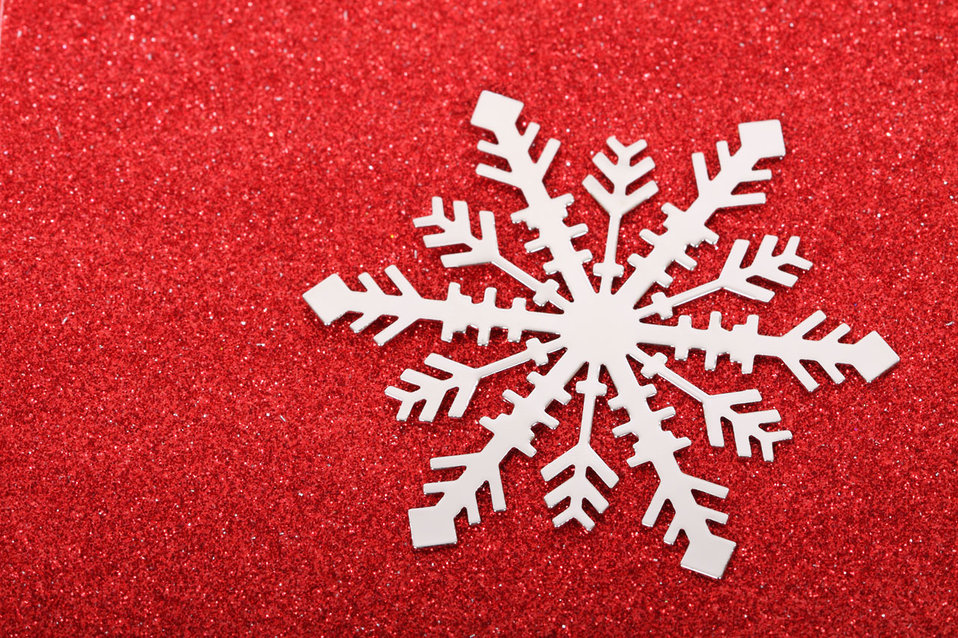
Snowflake background

Snowflake on red glittery background.